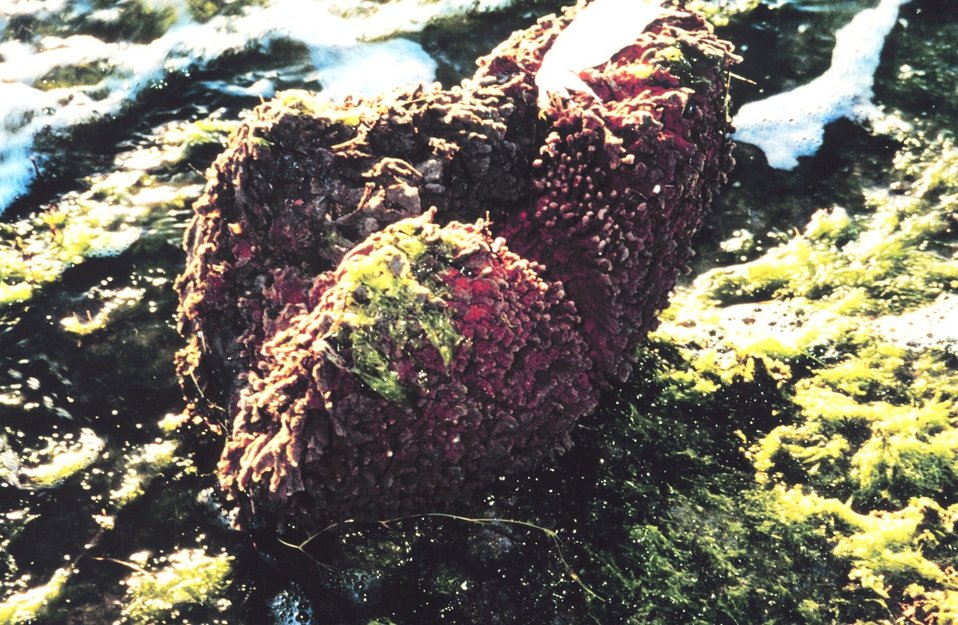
Redbeard sponge in the intertidal zone with a white feather caught in one of its crevices.